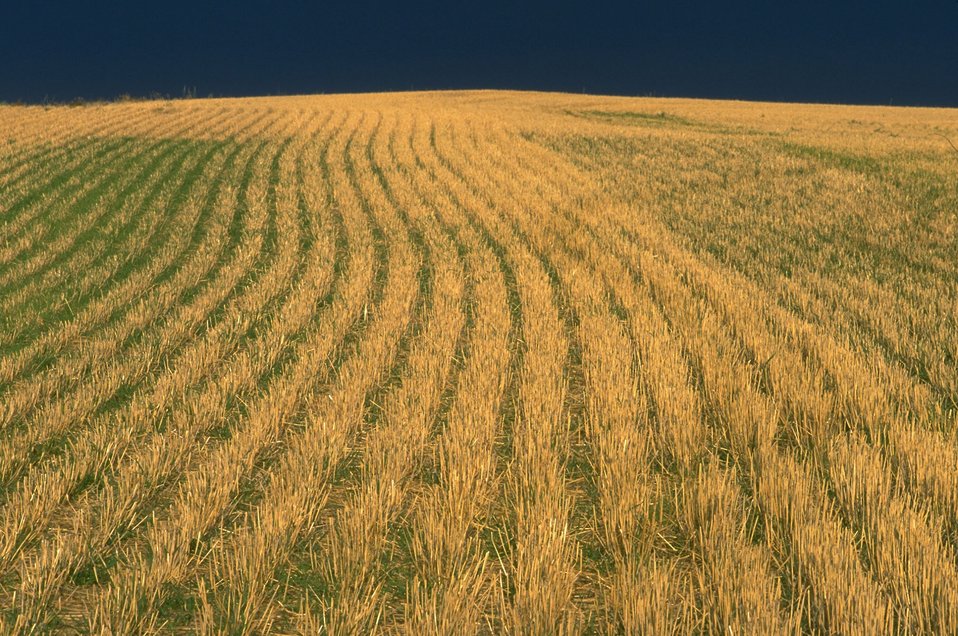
Farmland adjacent to the Upper Missouri River Breaks National Monument